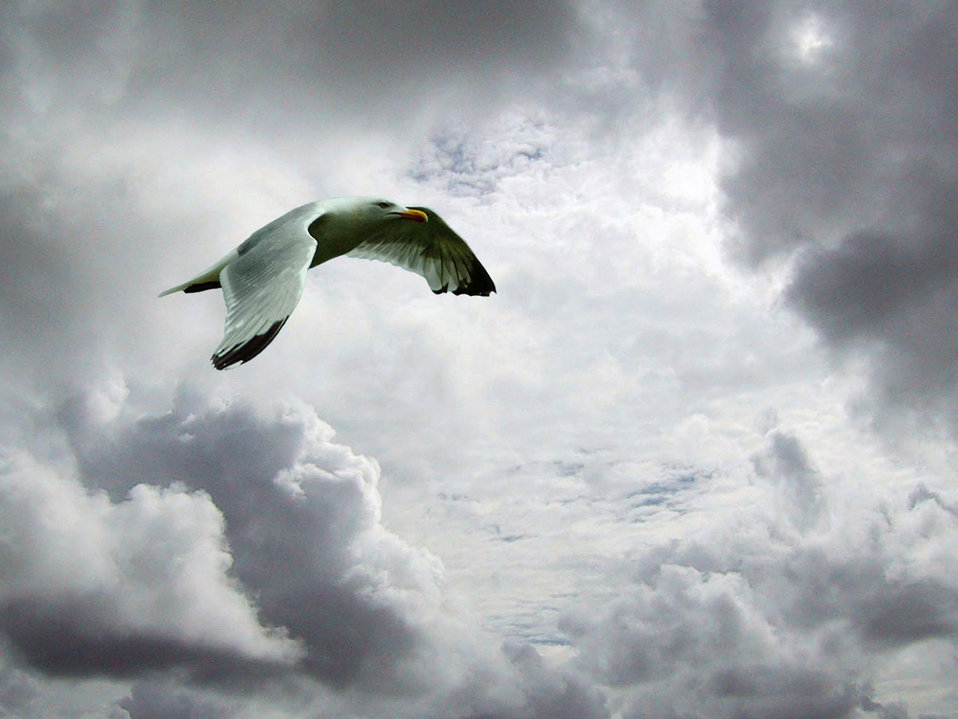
Skyscape with seagull

Dramatic skyscape with flying seagull.